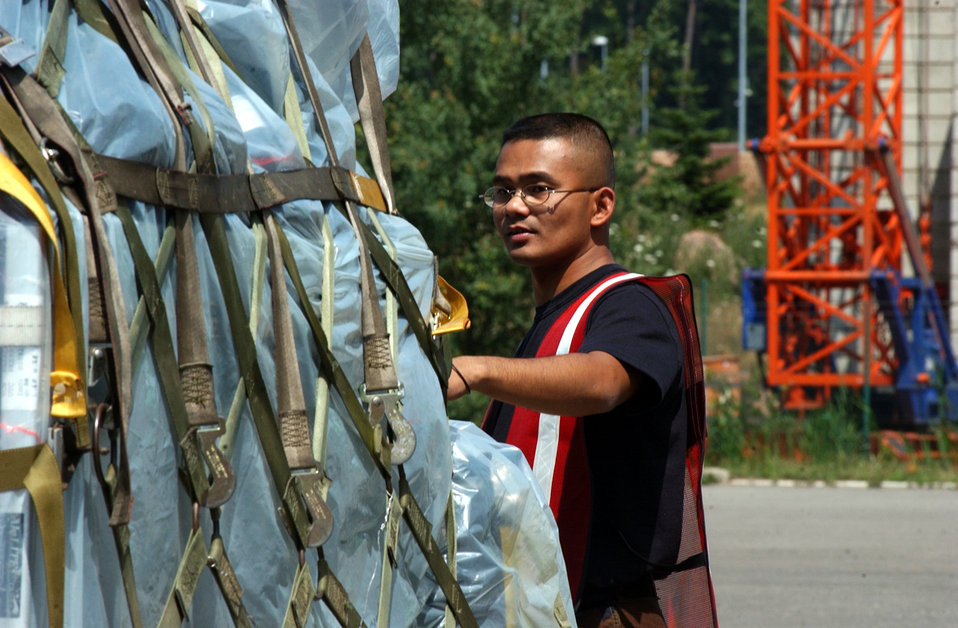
Ramstein planes, Airmen depart for Darfur mission

RAMSTEIN AIR BASE, Germany -- Staff Sgt. Ronnel Villodres checks a pallet of cargo July 15 before it is loaded onto a C-130 Hercules as part of a monthlong airlift mission to the Darfur region of Sudan. Three C-130 aircraft and about 40 Airmen here left July 16 for Kigali, Rwanda, as part of NATO's response to support the African Union's expanded peacekeeping mission in Darfur with logistics and training. Sergeant Villodres is assigned to the 435th Logistics Readiness Squadron.